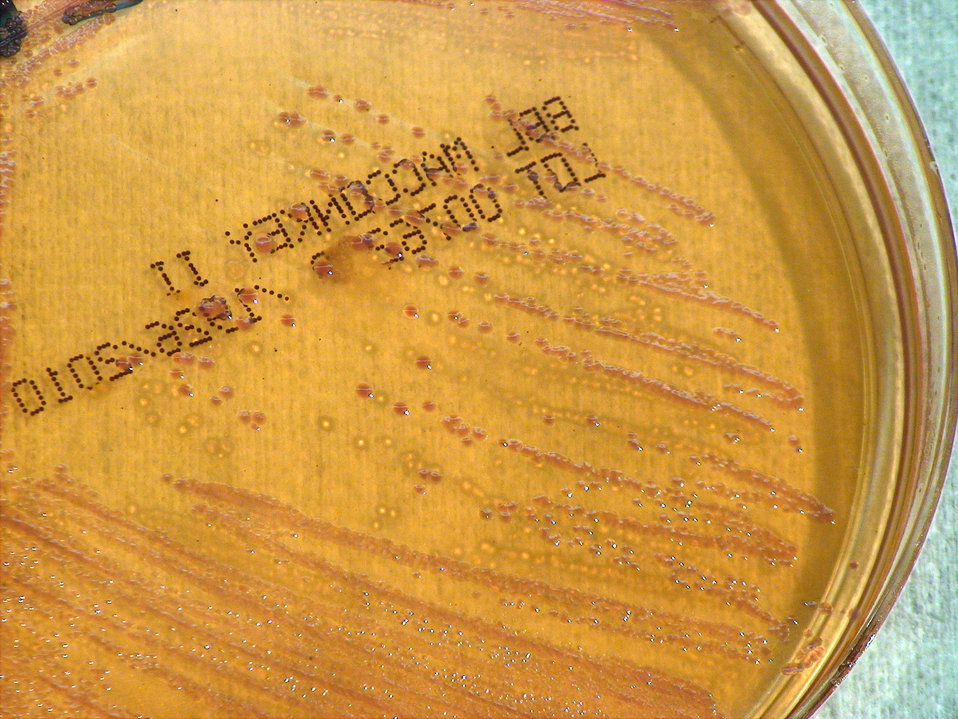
As a closer view of PHIL 12410, this photograph depicts the colonial morphology displayed by Gram-negative Burkholderia thailandensis bacteria, which was grown on a medium of MacConkey agar, for a 48 hour time period, at a temperature of 42�C. Also, see both PHIL 12405 and 12406, for views of this bacterial specie, grown on the same medium, for the same amount of time, however, at a lesser temperature of 37�C, and note that PHIL 12419 and 12420 depict the same bacterial specie grown on the same media, but at a lesser temperature (37�C), and for only 24hrs. Take a look at PHIL 12427 and 12428 colonial growth on the same medium and temperature, but at half the time period (24hr).